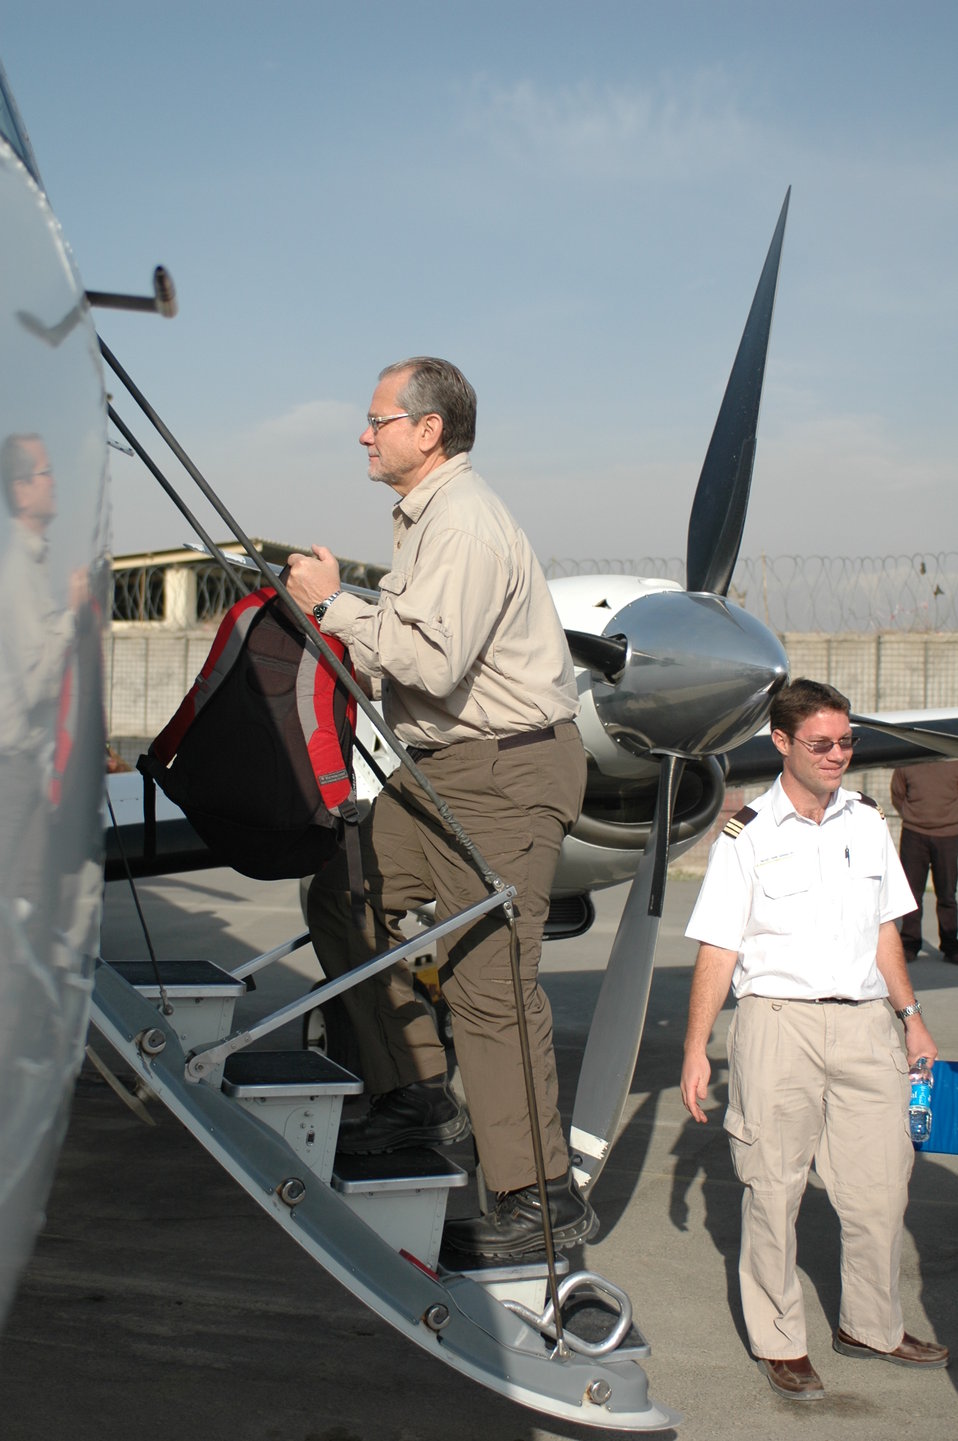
Dr Shah Visits Kandahar April 9, 2010